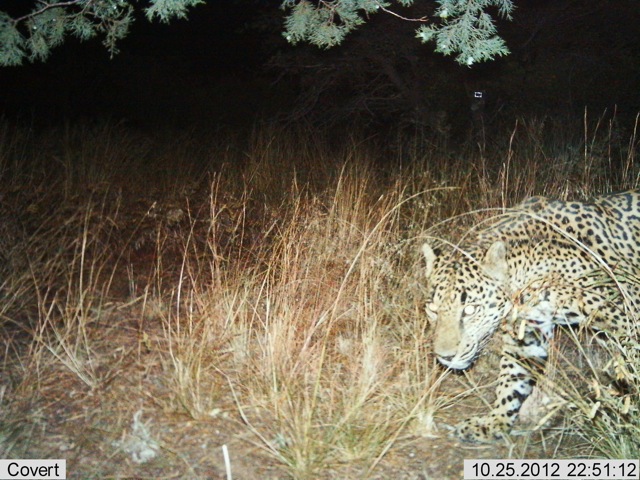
Male jaguar photographed by automatic wildlife cameras in the Santa Rita Mountains on Oct 25, 2012 as part of a U.S. Fish and Wildlife Service/Department of Homeland Security-funded jaguar survey conducted by University of Arizona.